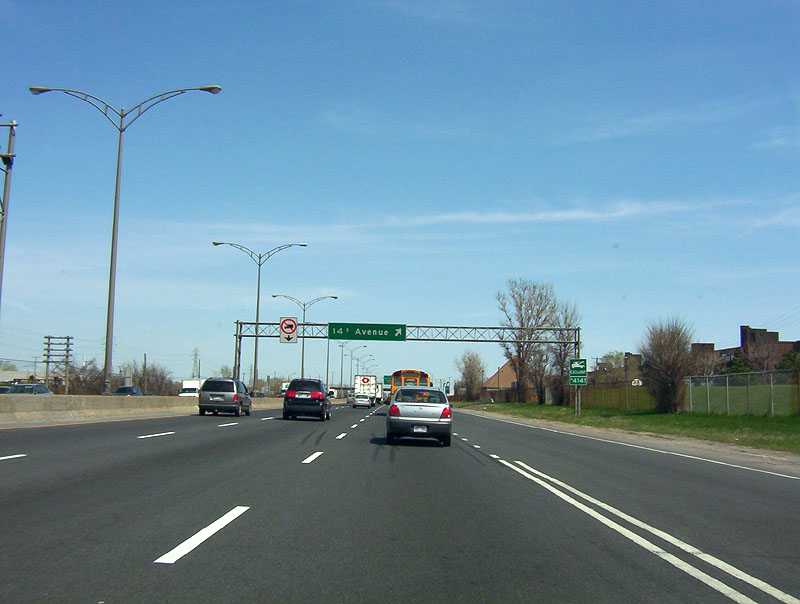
Looking east down A-20 at 14th Avenue, Lachine, Quebec